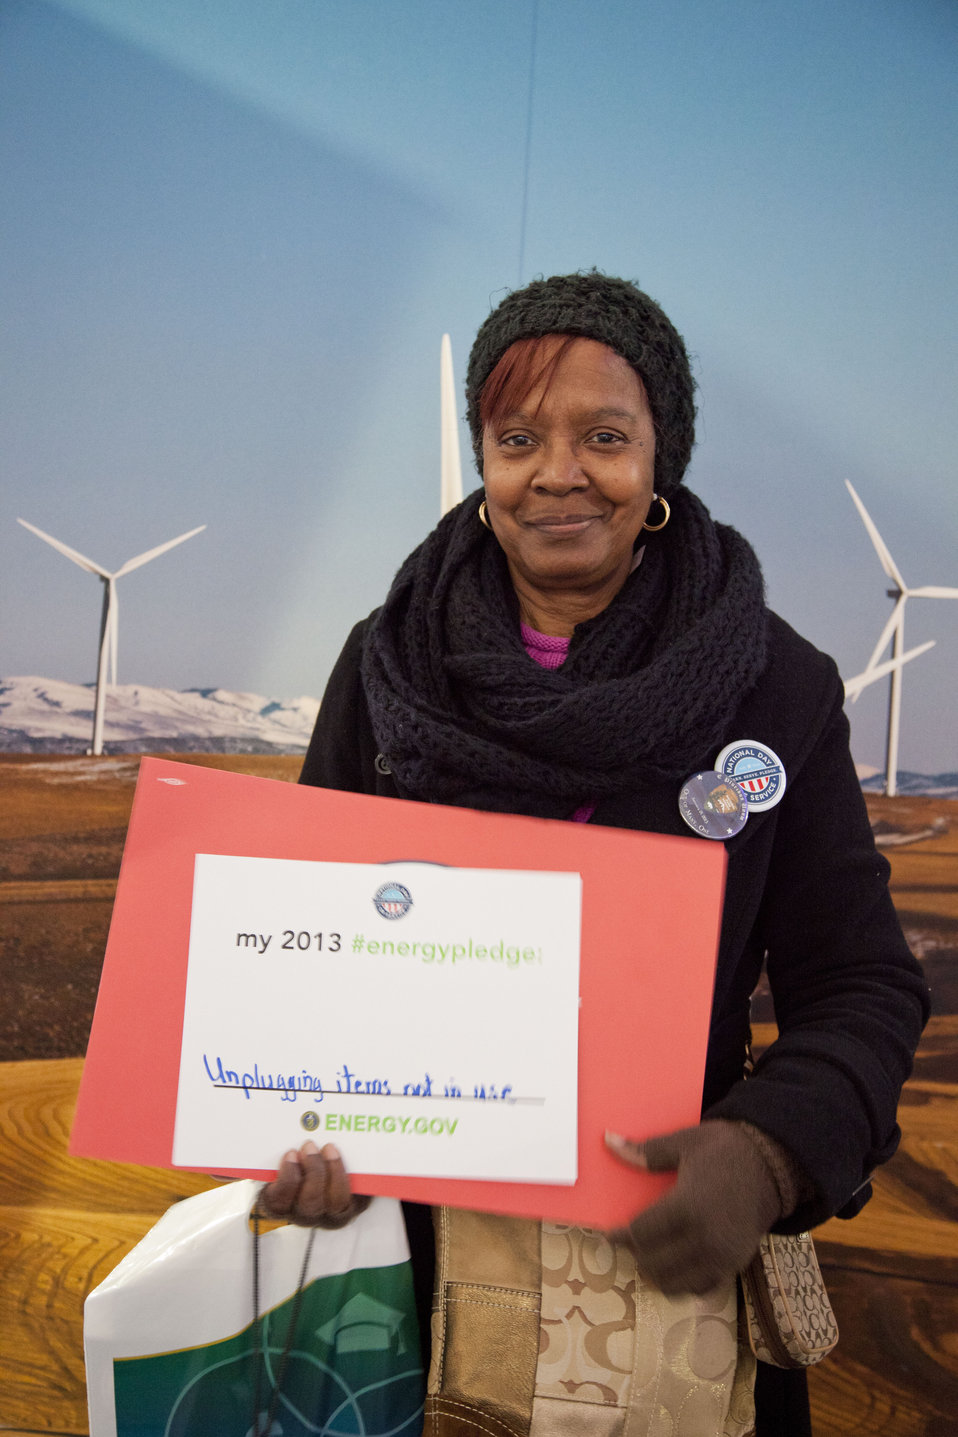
What's your #energypledge?